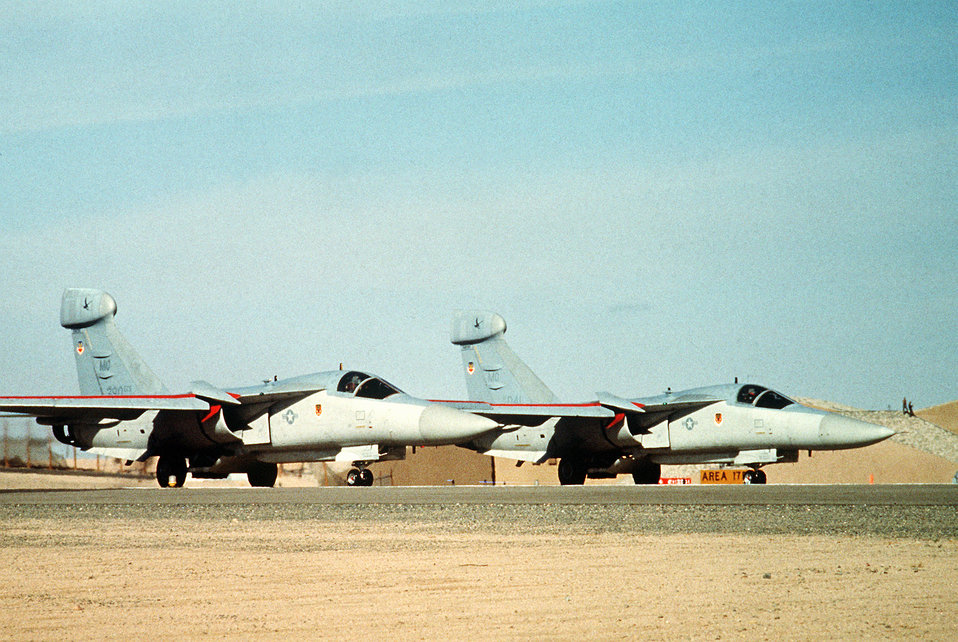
EF-111A Raven

1990's -- EF-111A Raven aircraft prepare to takeoff on a mission during Operation Desert Shield.